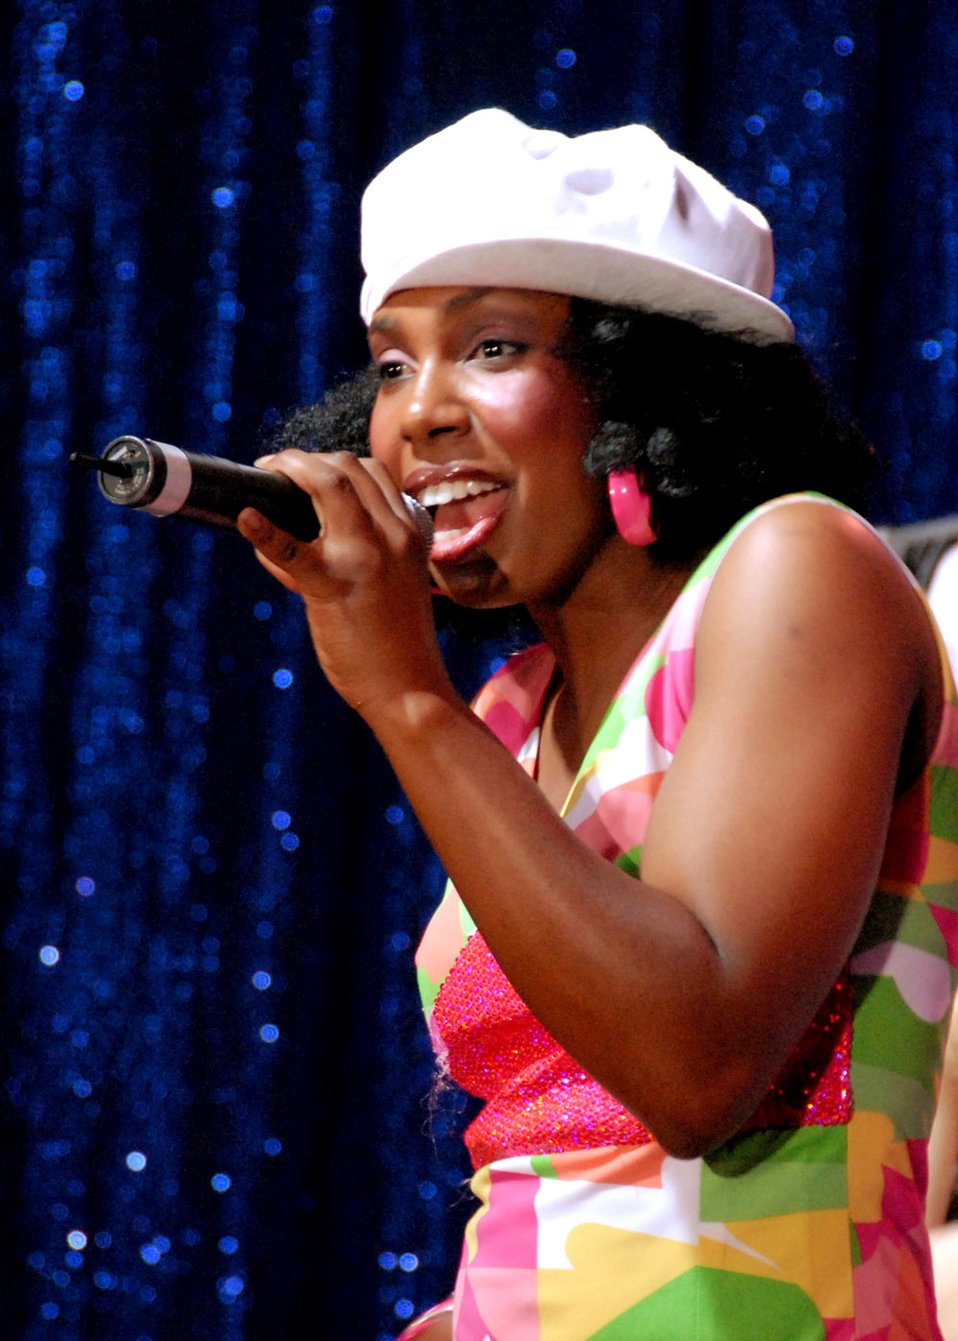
Tops In Blue performs at Osan

Senior Airman Chonte Walker performs during Tops In Blue's annual world tour celebrating